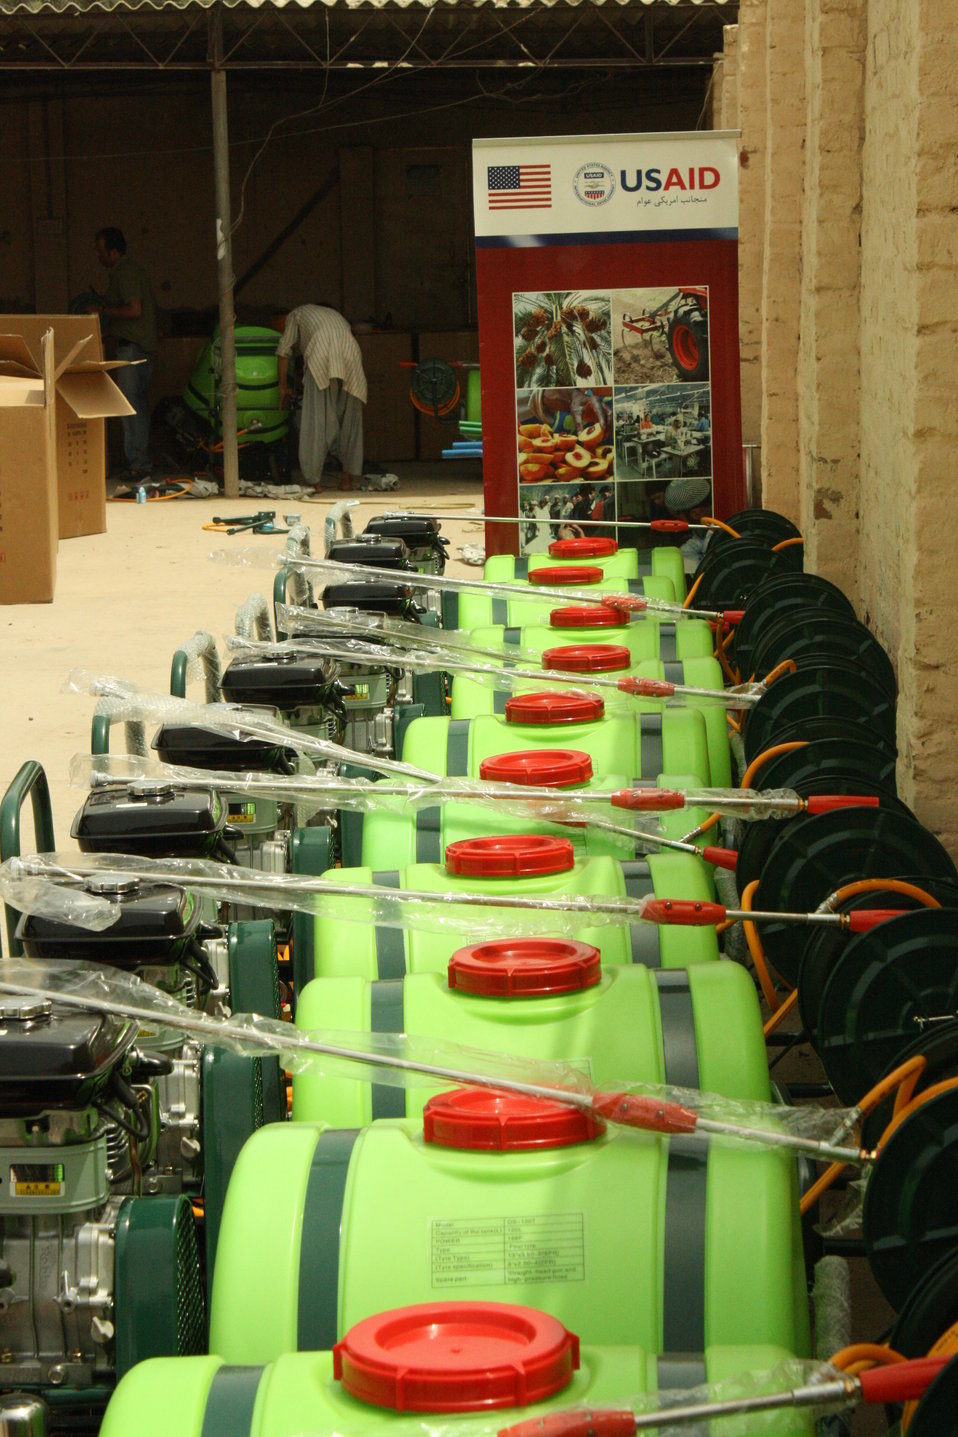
Date farming SMEs are being given standardized food-grade plastic crates, plastic tables, boom sprayers, date palm dryers, hand carts, etc.